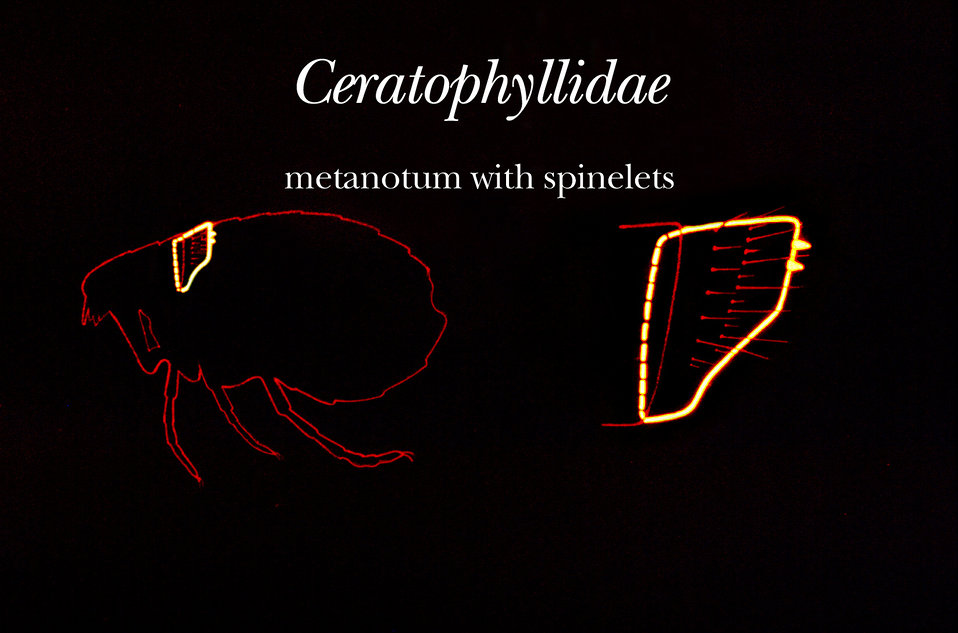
The posterior margin of the metanotum of fleas in the family Ceratophyllidae has spinelets, or tiny pigmented teeth.